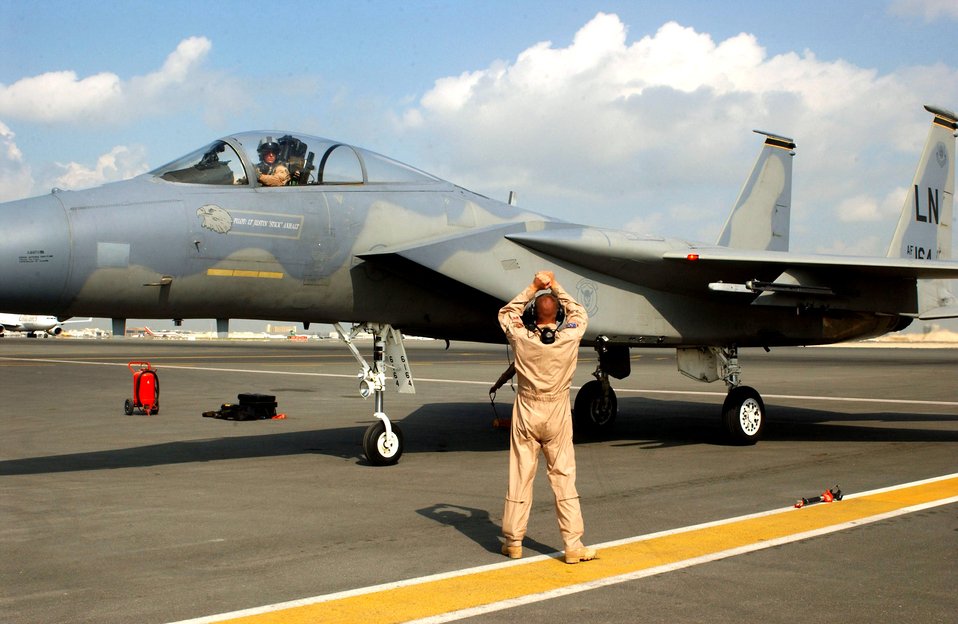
Performing in Dubai

DUBAI, United Arab Emirates (AFPN) -- Tech. Sgt. Barry Snokhous directs Capt. Joey Hemphill to his parking location after his F-15 demonstration practice for the Dubai Air Show. The F-15 is part of the West Coast Demonstration Team, and both Airmen are supporting the air show from Eglin Air Force Base, Fla.